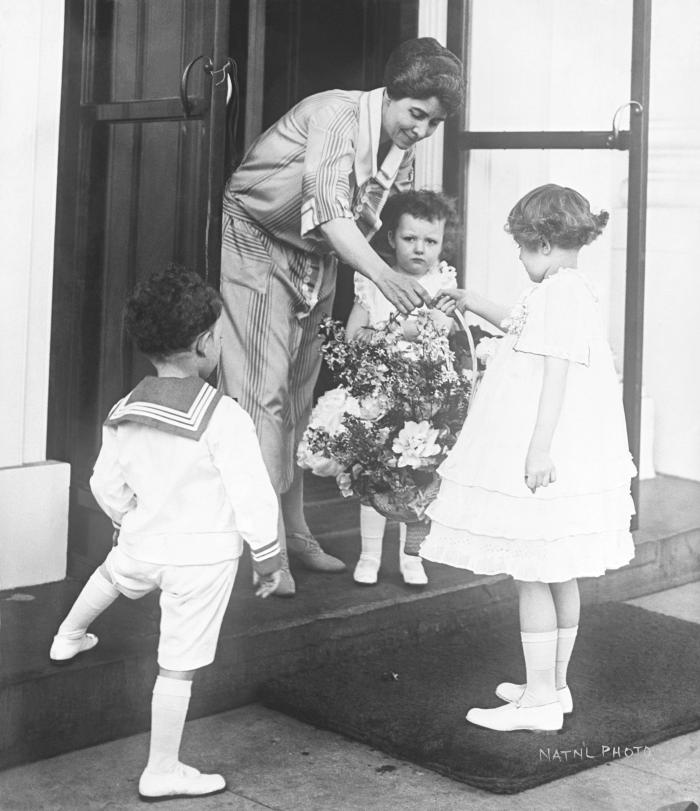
This historic photograph depicted the exchange of a floral arrangement between an adult and a child on the occasion of 'Child Health Day'. The location were this image was captured is unknown. The original image was scanned from a glass lantern slide donated by the Minnesota Department of Health, and is one of a historical collection of documents and photographs devoted to observances of Child Health Day in the United States.